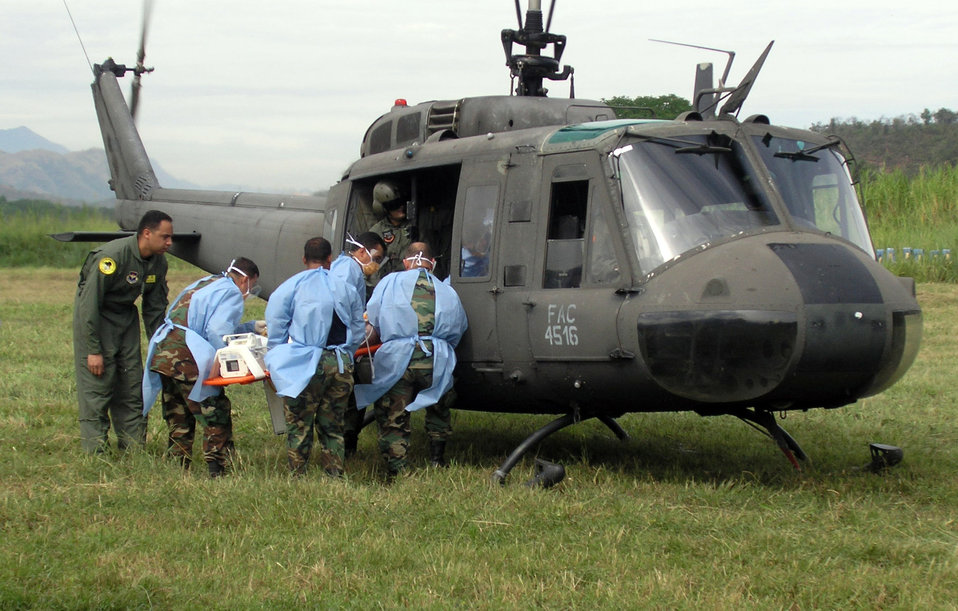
Airman helping to lead way during Colombia mission

Airman 1st Class Edgardo Sanchez de Jesus instructs students on how to properly load a patient on a helicopter for transport during an International Aeromedical Evacuation Critical Care Transport Course in Colombia Aug. 15. Airman Sanchez de Jesus is a cardiopulmonary technician with the 759th Surgical Operations Squadron at Lackland Air Force Base, Texas.